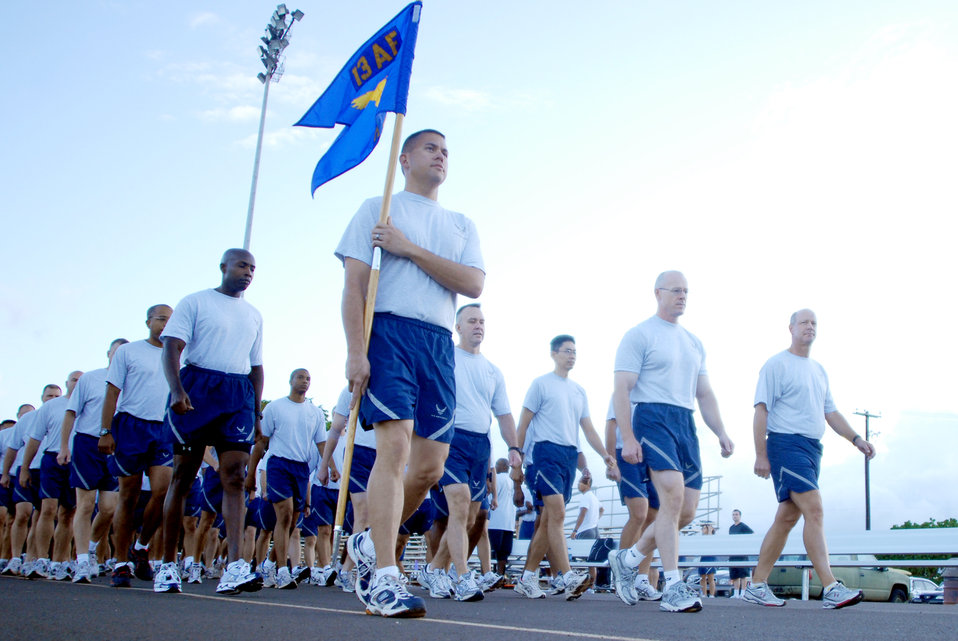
13th AF Jungle Day

Members of 13th Air Force march before beginning a warrior run during Jungle Day Nov. 13, 2009, at Hickam Air Force Base, Hawaii. The Jungle Day tradition originated when the organization was assigned to Andersen AFB, Guam, and gives 13th Air Force members a chance to have fun and give back to the local community.